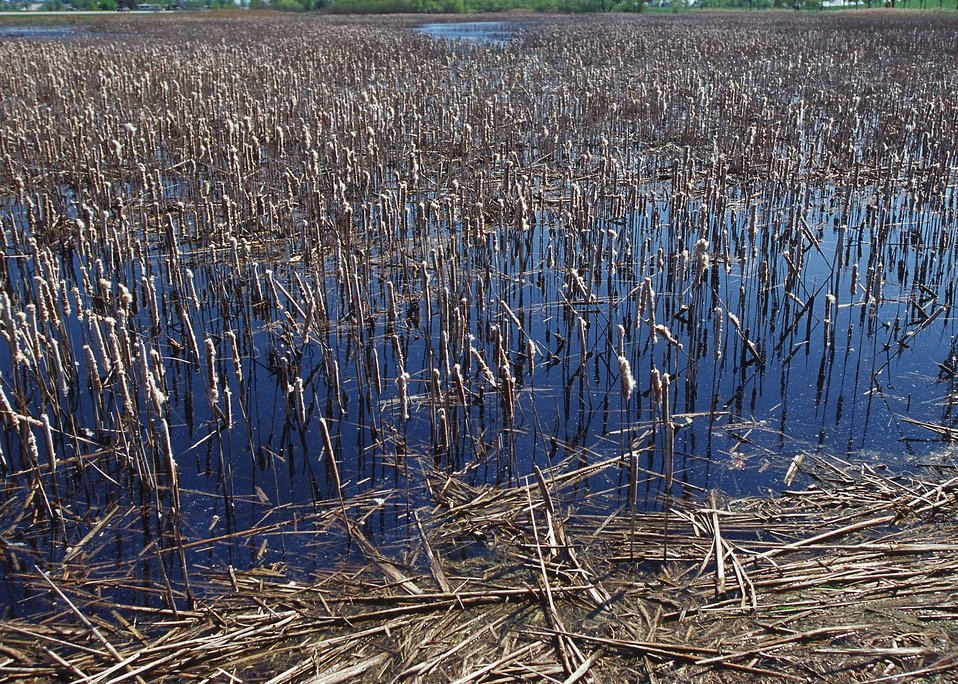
Wetland in the prairie pothole region of eastern South Dakota.